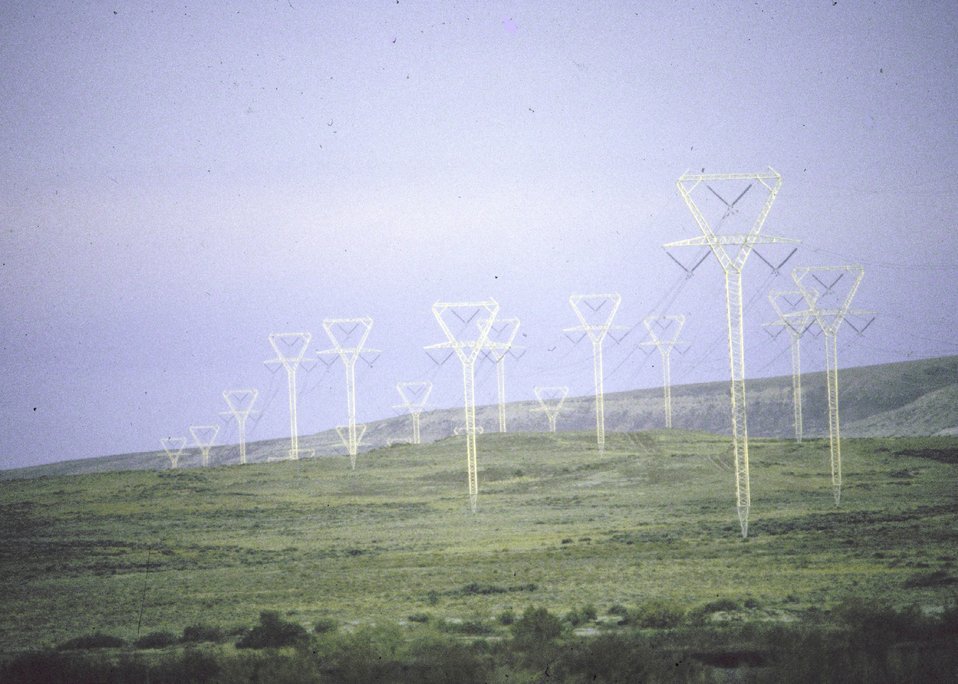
Transmission lines coming from the Jim Bridger Power Plant in Wyoming.